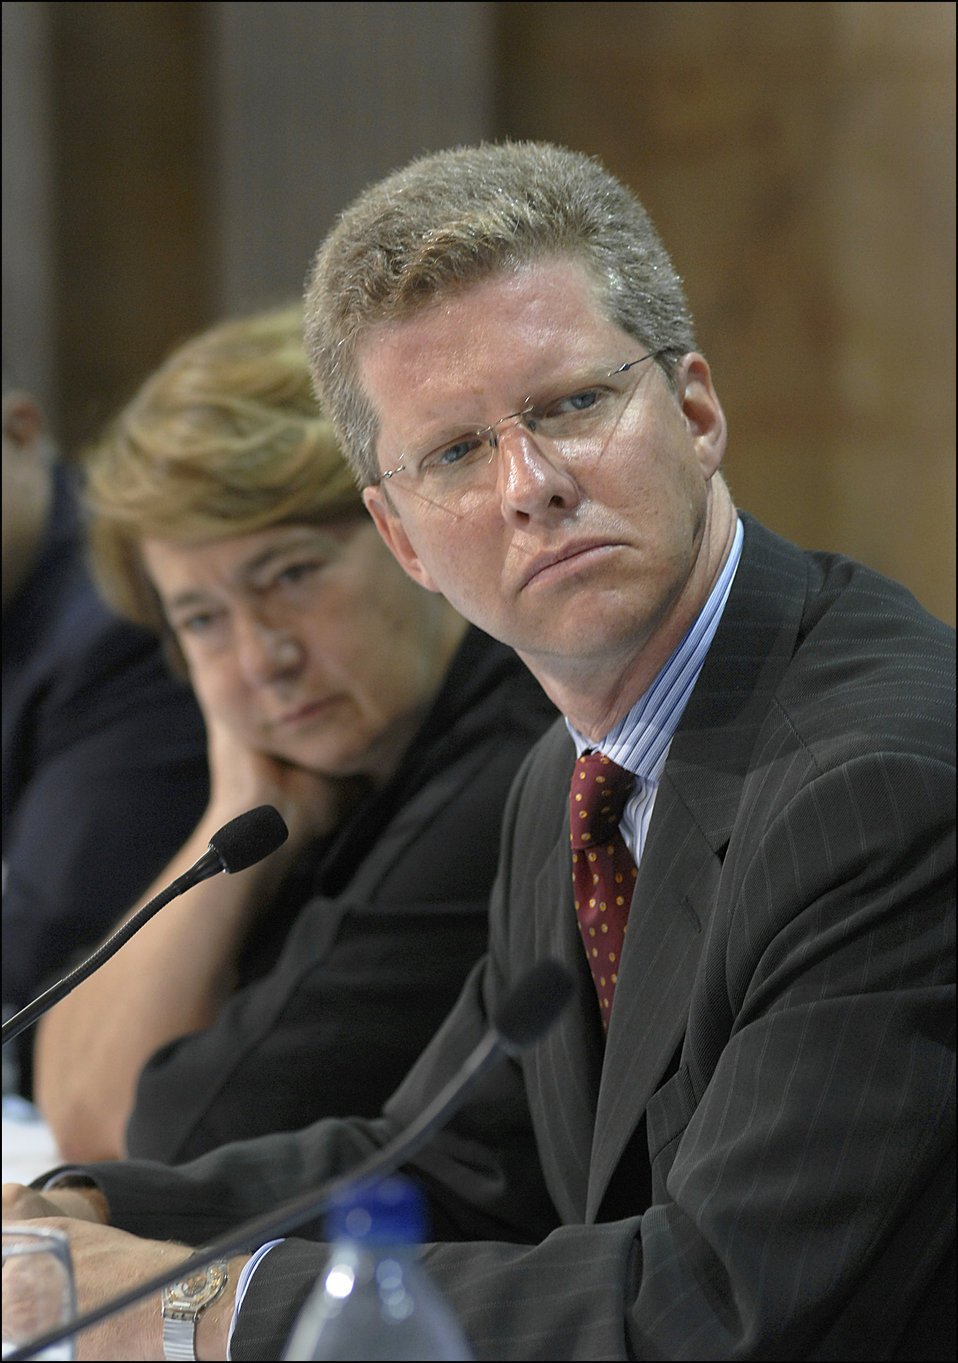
Conference on the Future of Housing Finance, 08/17/2010

HUD Secretary Shaun Donovan hosted the second panel on Housing Finance Reform and Broader Housing Policy Goals at the Conference on the Future of Housing Finance.